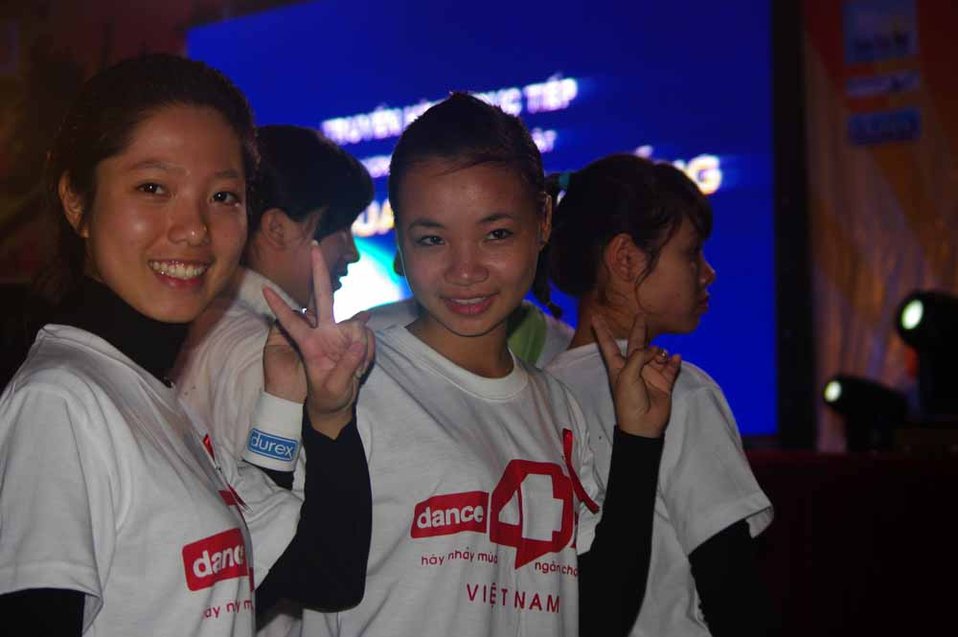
dance4life, Hanoi